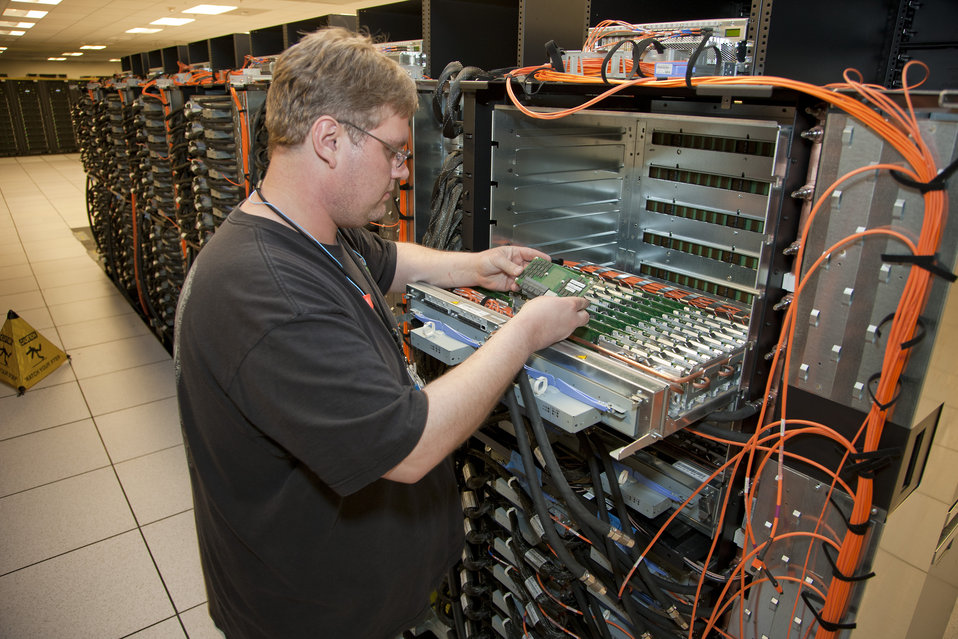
SEQUOIA EARNED THE NUMBER ONE RANKING ON THE INDUSTRY STANDARD TOP500 LIST OF THE WORLD'S FASTEST SUPERCOMPUTERS RELEASED ON JUNE 18, 2012.

Sequoia is dedicated to NNSA's Advanced Simulation and Computing program for stewardship of the nation's nuclear weapons stockpile, a joint effort from LLNL, Los Alamos and Sandia National laboratories. It is primary water cooled and consists of 96 racks; 98,304 compute nodes; 1.6 million cores; and 1.6 petabytes of memory. Sequoia was built for NNSA by IBM. It is scheduled for deployment in fall 2012.